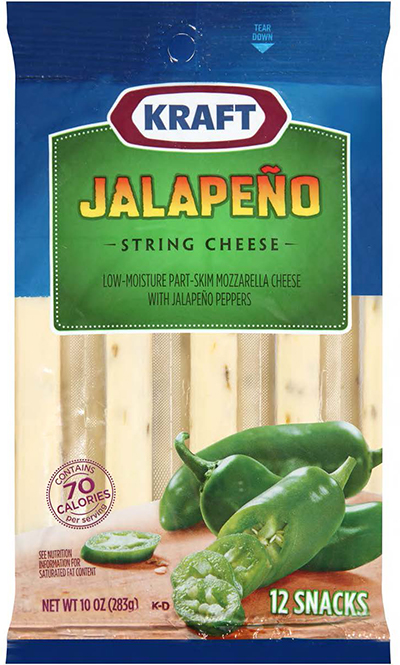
RECALLED – Cheese

October 25, 2013 – Product Recall – Kraft Voluntarily Recalls Some Varieties of Kraft And Polly-O String Cheese And String Cheese Twists Due to Premature Spoilage.